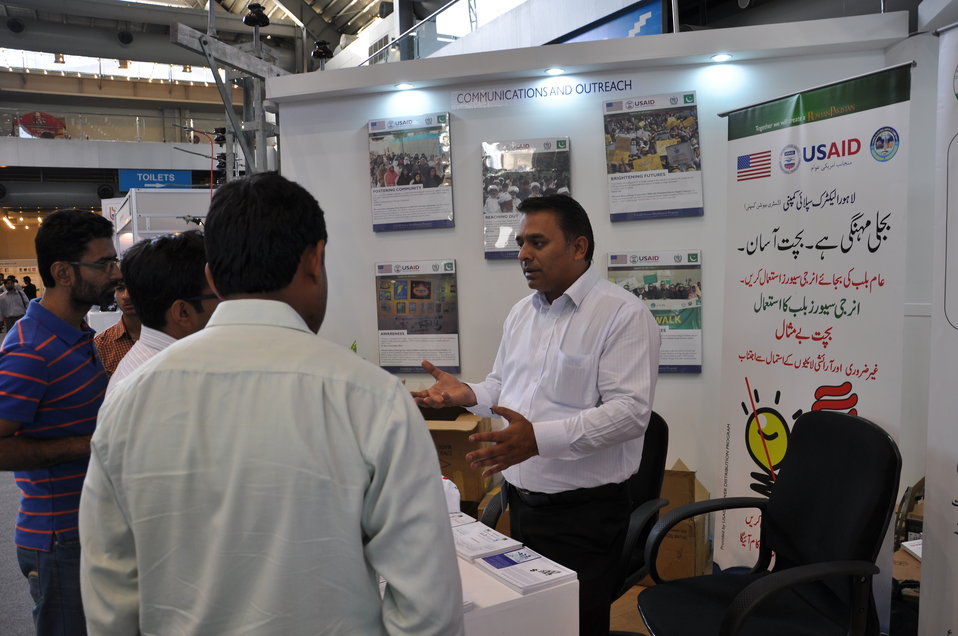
USAID participates in 11th International Pakistan Oil Gas Energy Exhibition

Visitors at the communications and outreach stall